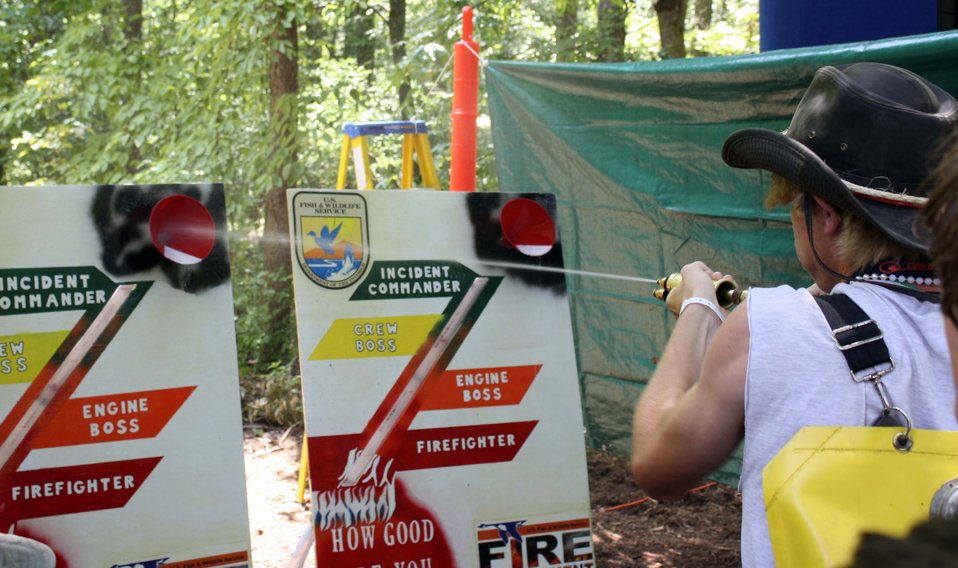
Boy Scout Jamboree 2010